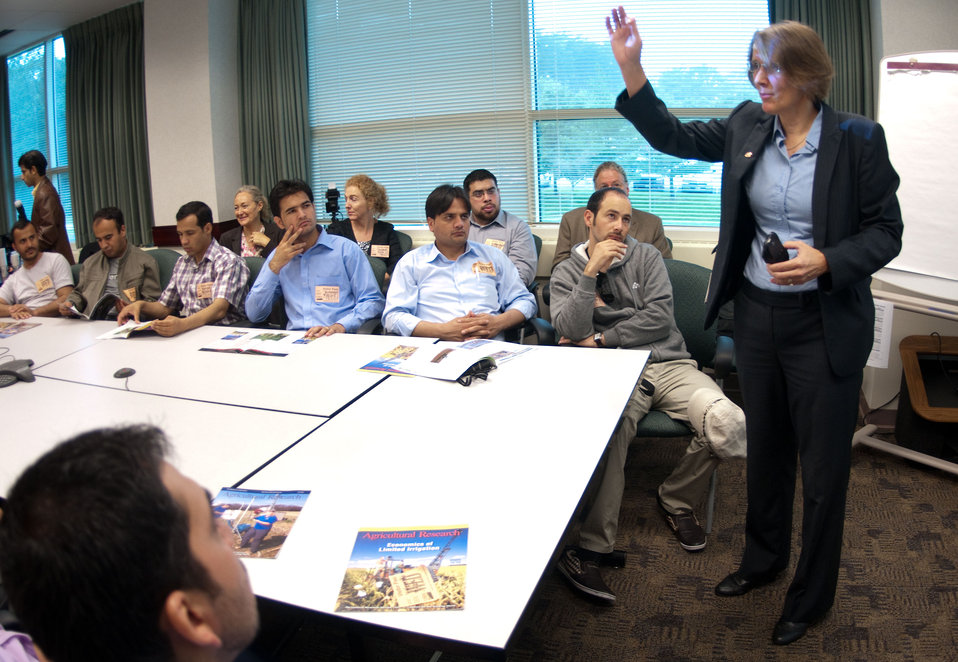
U.S. Department of Agriculture (USDA), Agriculture Research Service (ARS), International Research Program's Jennifer Woodward-Greene, spoke about the organization of USDA and ARS with the Afghan Ministry of Agriculture's Borlaug Fellows at the George Washington Carver Center, in Beltsville, MD on Wednesday Sept. 21, 2011.